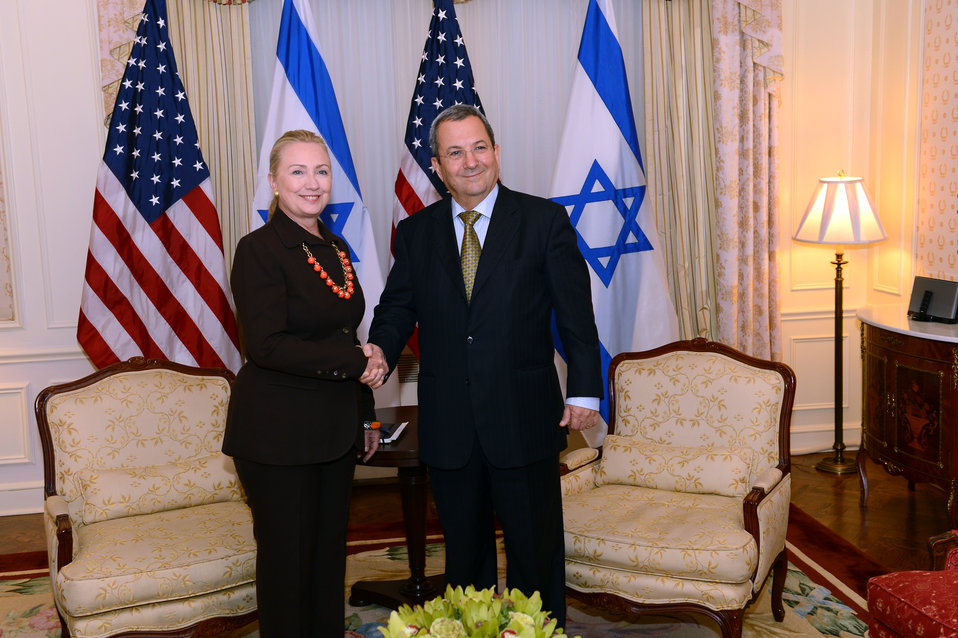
Secretary Clinton Meets With Israeli Defense Minister Barak

U.S. Secretary of State Hillary Rodham Clinton meets with Israeli Defense Minister Ehud Barak in New York, New York on September 23, 2012.